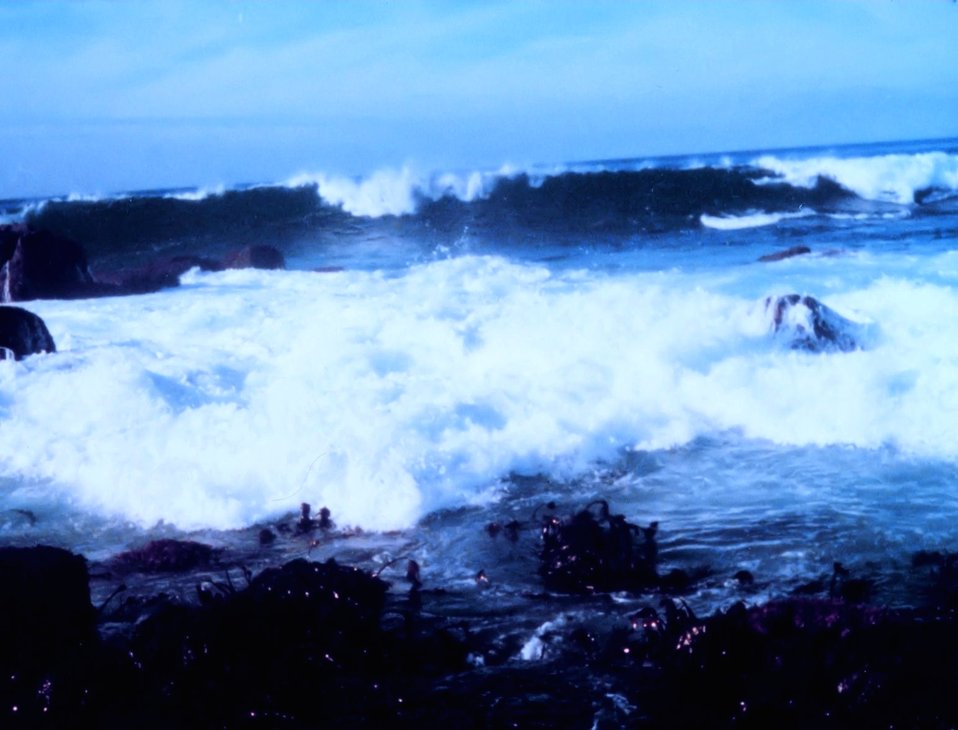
Surf breaking over the rocks and kelpbeds at Point Pinos, Monterey area.